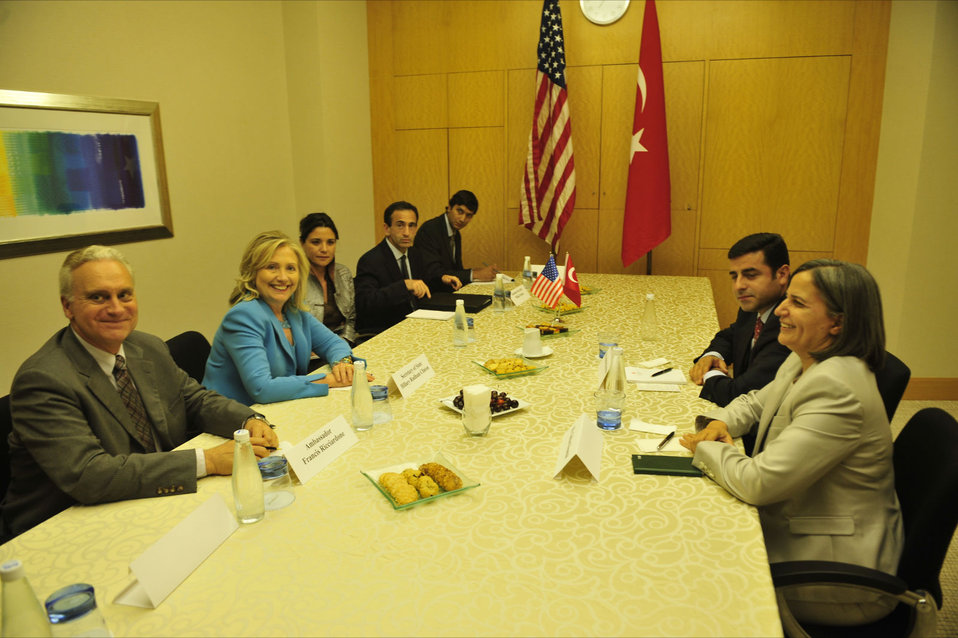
Secretary Clinton Meets With Turkish Opposition Leaders

U.S. Secretary of Hillary Rodham Clinton, second from left, meets with Peace and Democracy Party (BDP) Chairman Selahattin Demirtaş, a Turkish opposition leader, in Istanbul, Turkey, on July 16, 2011.